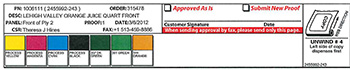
RECALLED – Orange Juice

March 3, 2014 – Product Recall – Lehigh Valley Dairy Conducts Voluntary Recall of Lehigh Valley, Swiss Premium, and Price Chopper Brand Orange Juice Because It May Contain Undeclared Allergen (Milk).